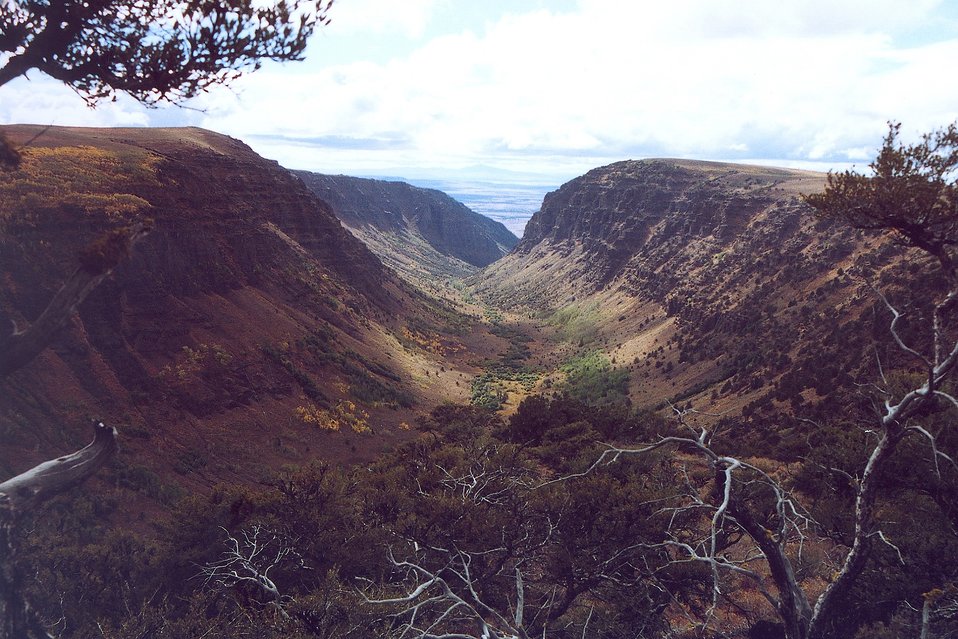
Little Blitzen, looking West near Pratt Overlook.